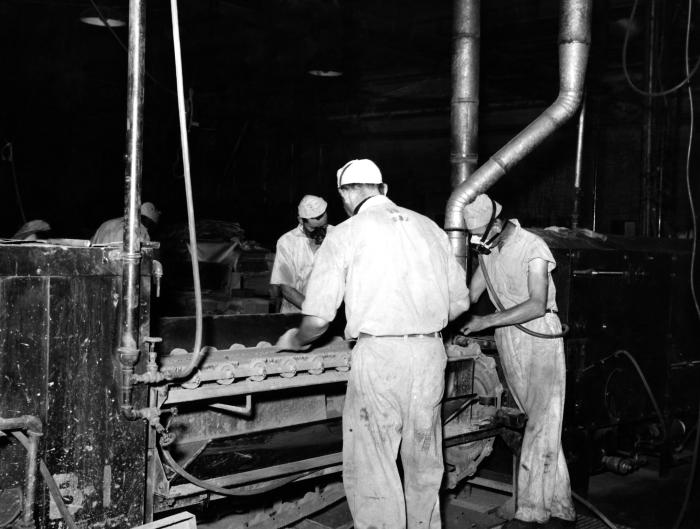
Published in the 'Public Health Bulletin', No. 262, 1941, this historic image, which was provided by the Center for Disease Control's (CDC), National Institute for Occupational Safety and Health (NIOSH) depicted a battery factory in which workers were in the process of assembling storage batteries. These men were working at a battery plate cleaning station, where they would scour the metallic plates used in the composition of lead acid batteries. As a device containing both lead, a toxic heavy metal, and acid, in the form of sulfuric acid, batteries are potentially dangerous, both in their finished state, as well as during their manufacture. Precautions need be taken when building a battery, including the use of goggles, gloves, and filtered breathing devices. These workers were wearing filtered masks, but no goggles, and it could not be determined if any of the men were wearing gloves, which would have prevented accidental eye, or dermal exposure.